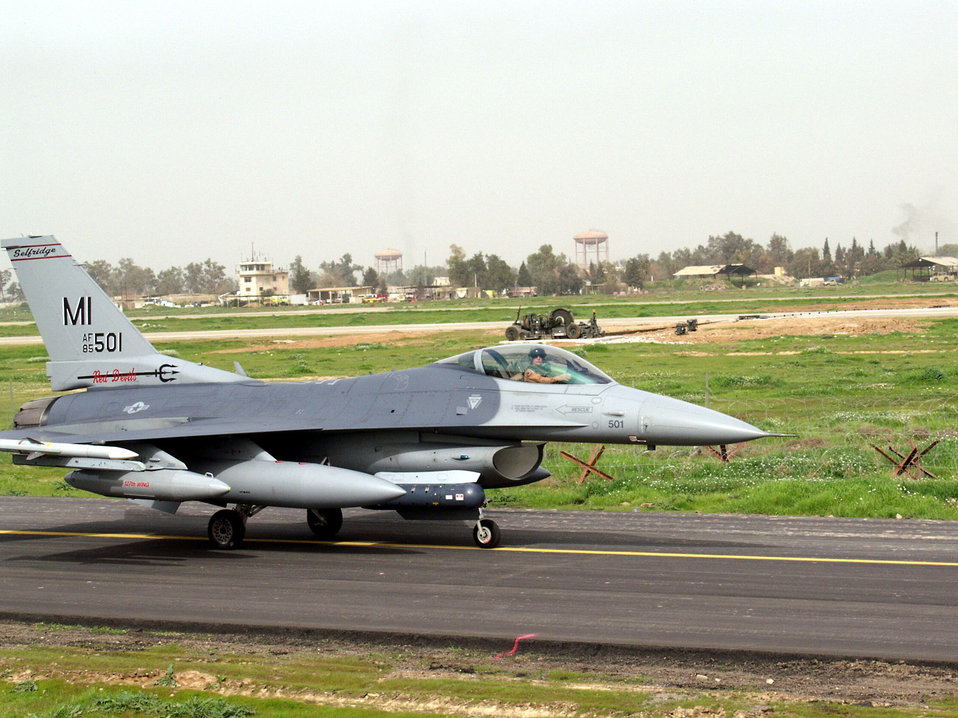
F-16s arrive at Kirkuk

KIRKUK AIR BASE, Iraq -- The first F-16 Fighting Falcon from Selfridge Air National Guard Base, Mich., arrives here March 1. F-16s are replacing A-10 Thunderbolt II aircraft of the 354th Expeditionary Fighter Squadron from Davis-Monthan Air Force Base, Ariz. The base is now home to the only operational squadron of F-16s in Iraq.